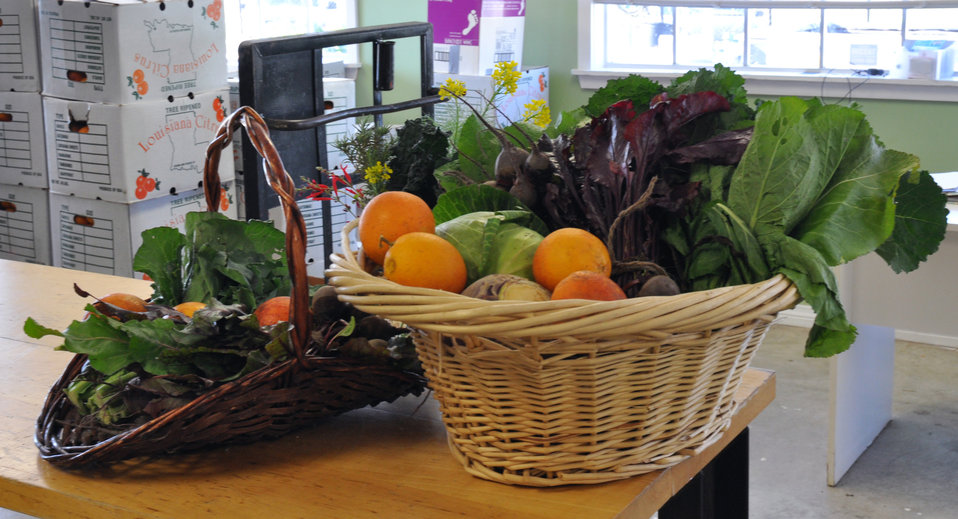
Vegetables on display at Hollygrove Market and Farm (HGMF) in New Orleans, LA on Tuesday, Feb. 26, 2013.